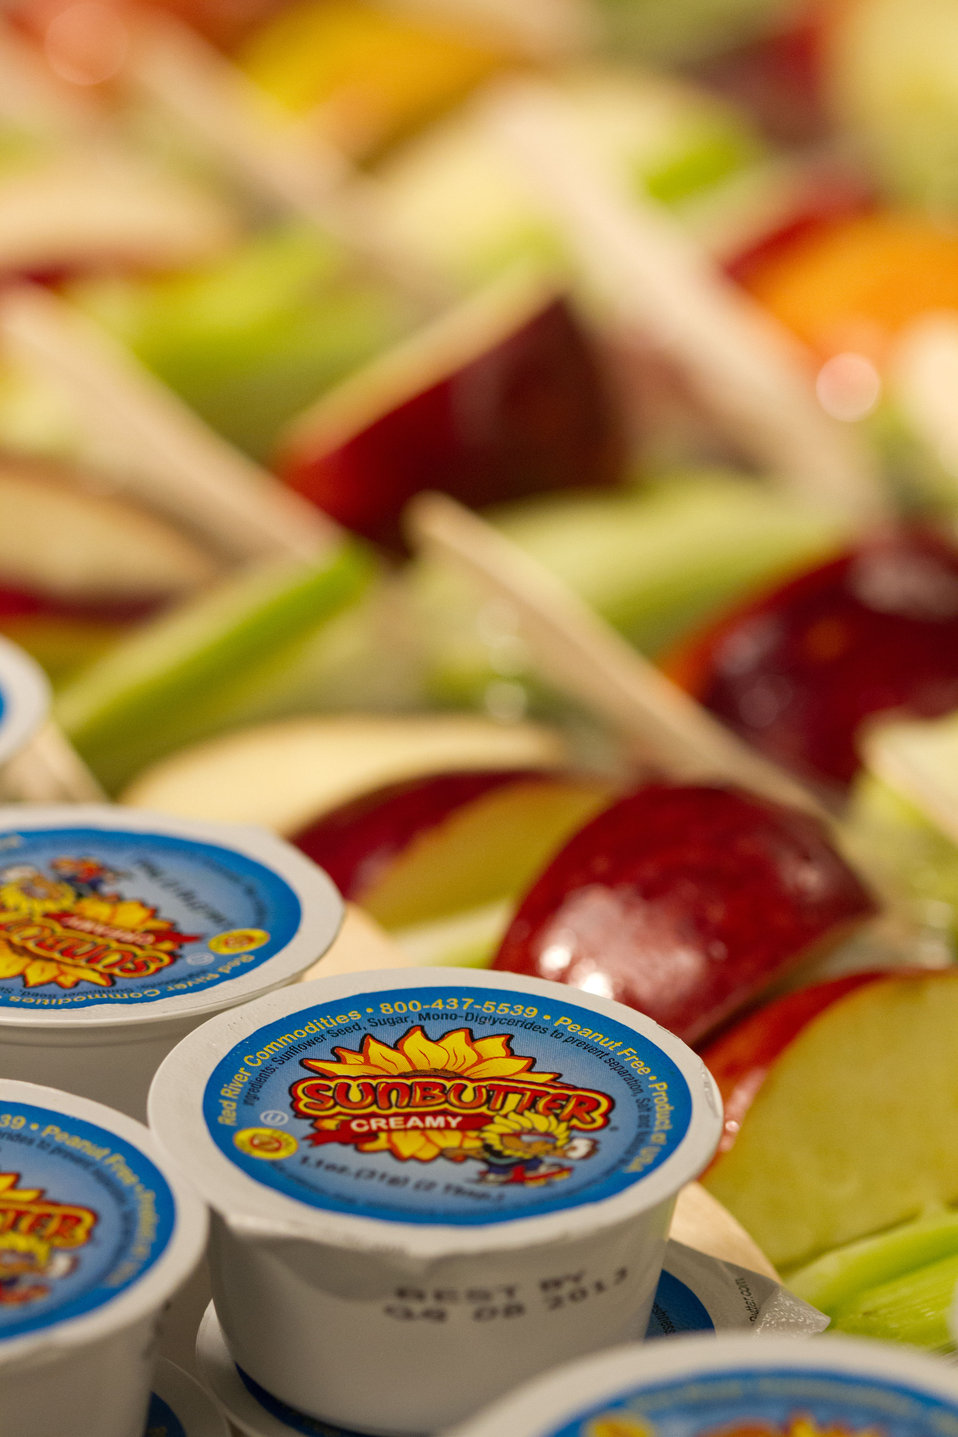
Apple and celery cup with sunbutter dip is an important new menu item that substituted peanut butter with a sunflower seed-based spread, and was sampled by more than 50 students from the 5th grade classes at Yorkshire Elementary School in Manassas, VA., during a taste testing of the new school lunch menu created to meet the new standards. Students tested a sample menu of black-bean filled pizza, pineapple spear, and sunny broccoli and cauliflower toss, on Wednesday, September 5, 2012.